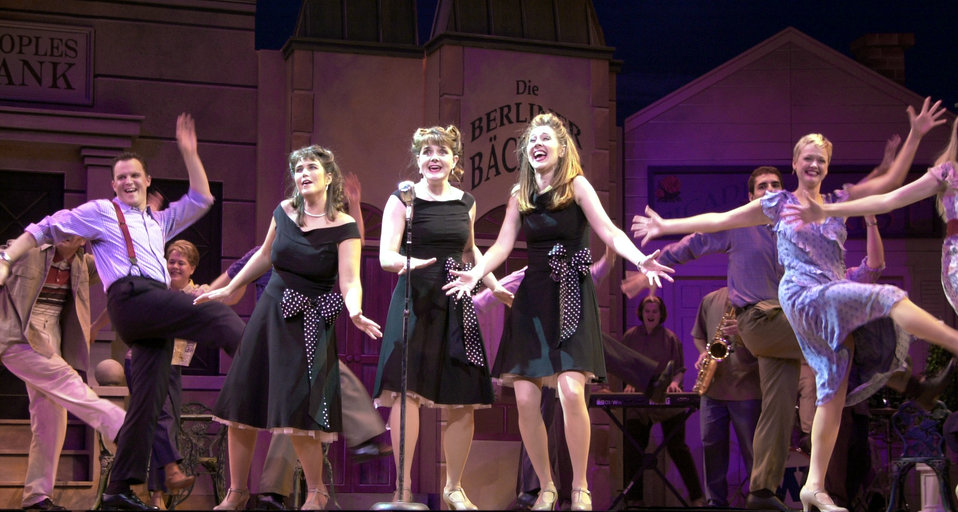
Going Hollywood

HOLLYWOOD, Calif. -- Master Sgts. Linda Waring, Jennifer Lyons and Robin Askew of the U.S. Air Force Band from Bolling Air Force Base, D.C., perform as the